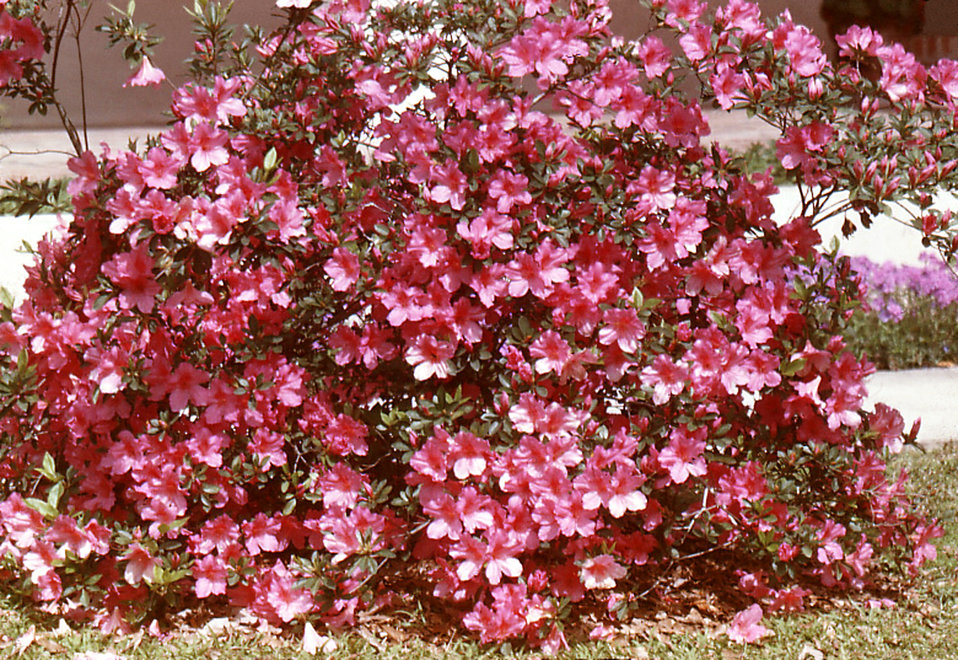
On the grounds of the Carville, Louisiana Leprosarium there were many wonderful flower gardens, hosting plants of all kinds. Some of the patients had magical green thumbs, to which these magnificent azaleas surely attest. Being that the patients were for the most part quarantined, and therefore, sequestered from the surrounding society, participation in outdoor activities such gardening were much appreciated.The National Hansen's Disease Museum's (NHDM) mission is to collect, preserve and interpret the medical and cultural artifacts of the Carville Historic District. In addition, we want to promote the understanding, identification, and treatment of Hansen's Disease (leprosy). We fulfill this mission by creating and maintaining museum displays, traveling exhibits, publications and a website in order to educate and inform the public on all levels.